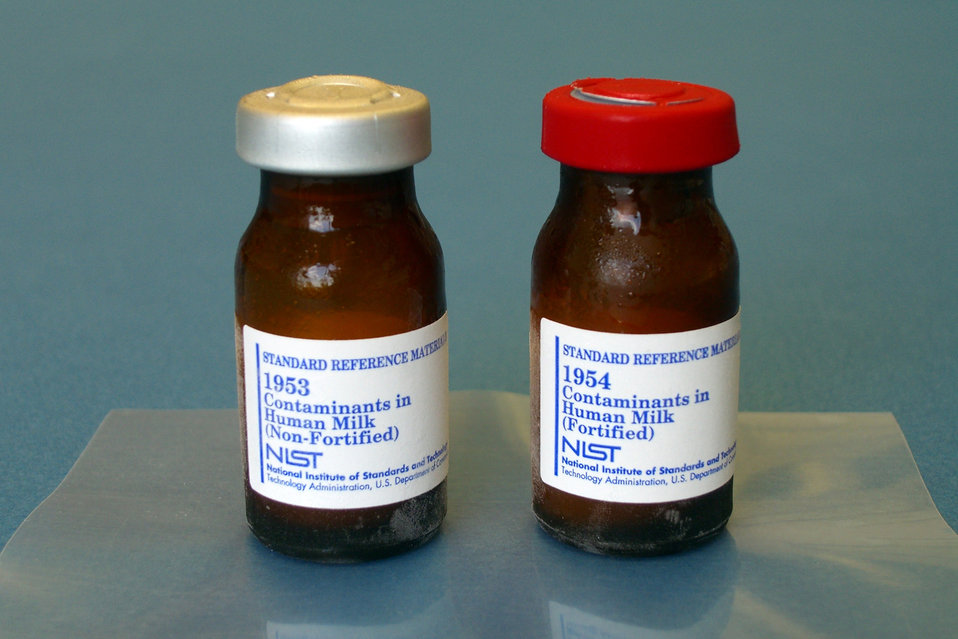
Human Milk Contaminant SRM

The new NIST Standard Reference Materials for organic contaminants in human body fluids reflect changes in contaminant levels since the last materials were issued in 2000levels of PCBs, pesticides, dioxins/furans and other contaminants have decreased by 50 percent while the levels of brominated flame retardants have been on the rise.